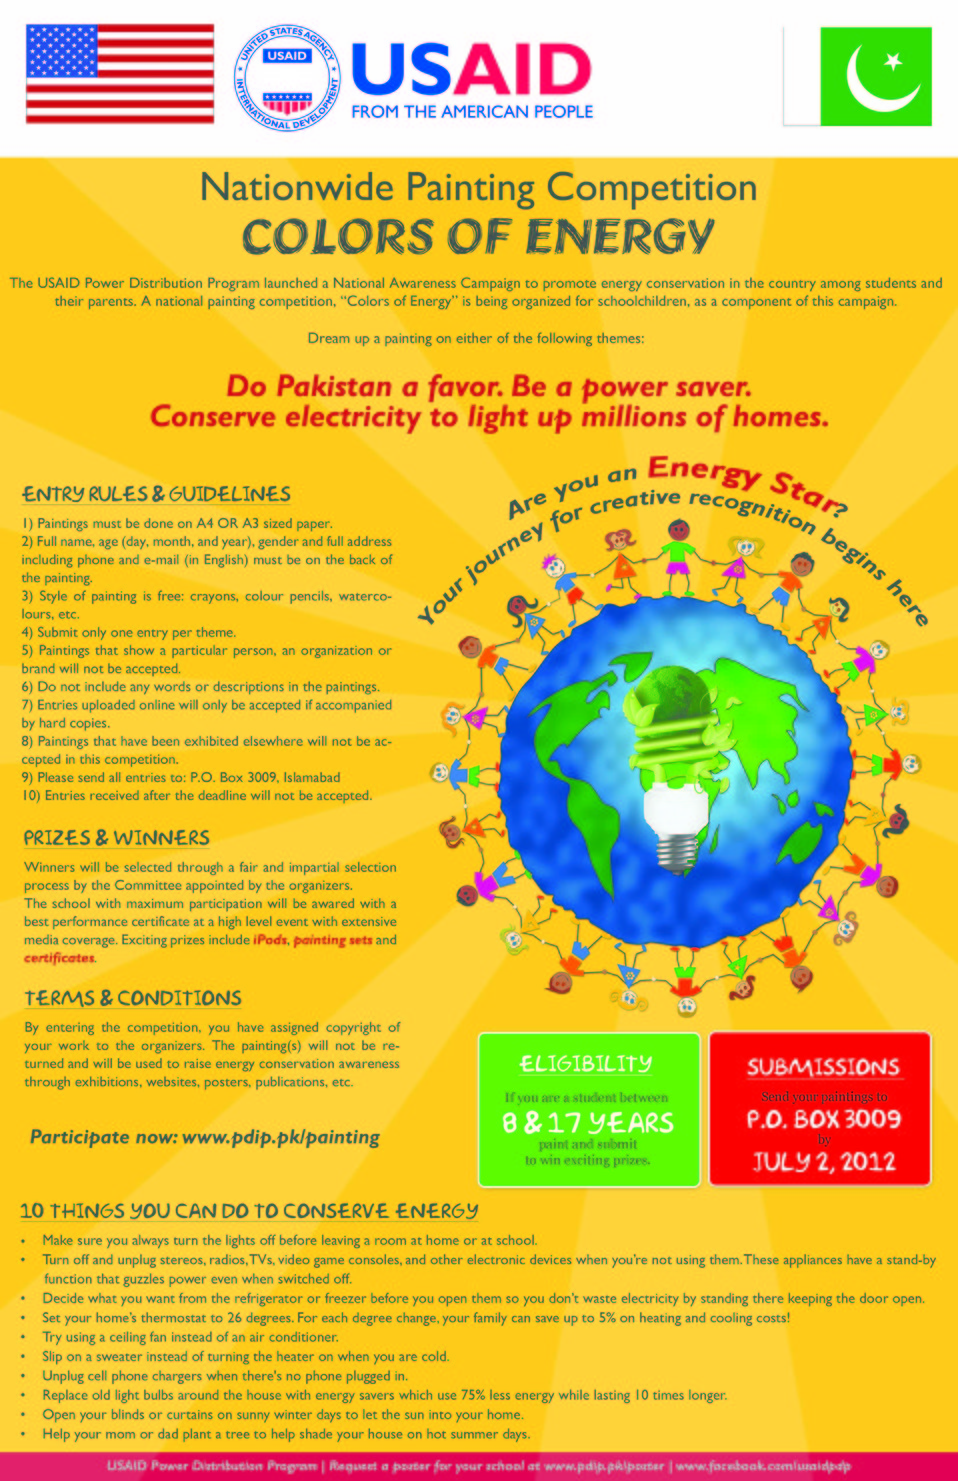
School Poster for Colors of Energy

Islamabad, June 8, 2012: Homes and schools are among the largest consumers of electricity in Pakistan, and if children are engaged and involved in nationwide energy conservation, it would result in the reduction of load shedding and uninterrupted electricity to consumers. Energy consumption in everyday life results in environmental degradation and load shedding since energy is produced from fuel, which is culled from coal, oil and natural gas. These non-renewable sources of energy millions of years in the making will eventually dry up if not conserved.